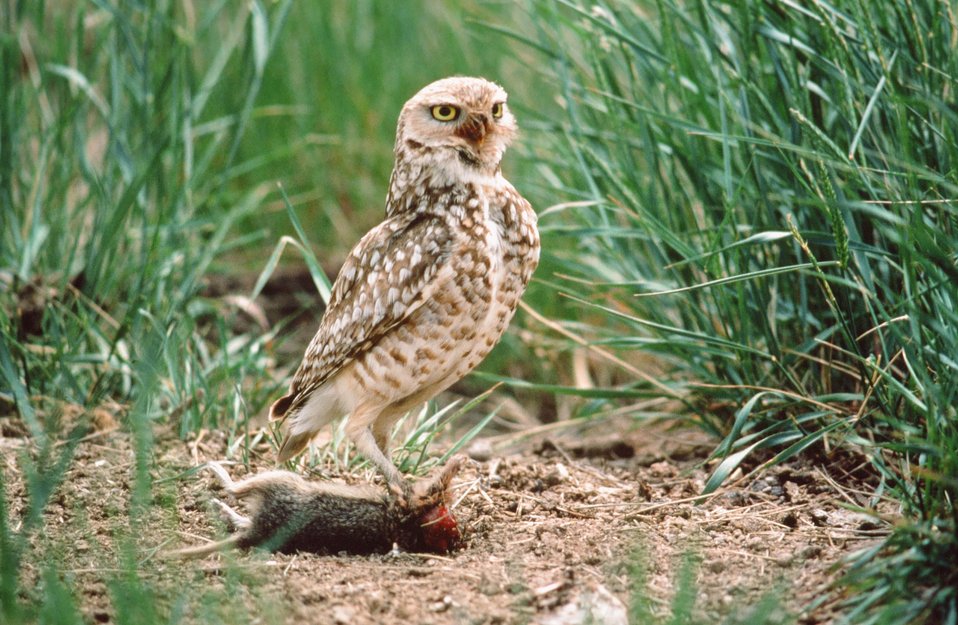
Burrowing owl

This Burrowing Owl with its distinctive yellow eyes is seen holding its prey. Burrowing Owls make their nests in burrows in the ground.